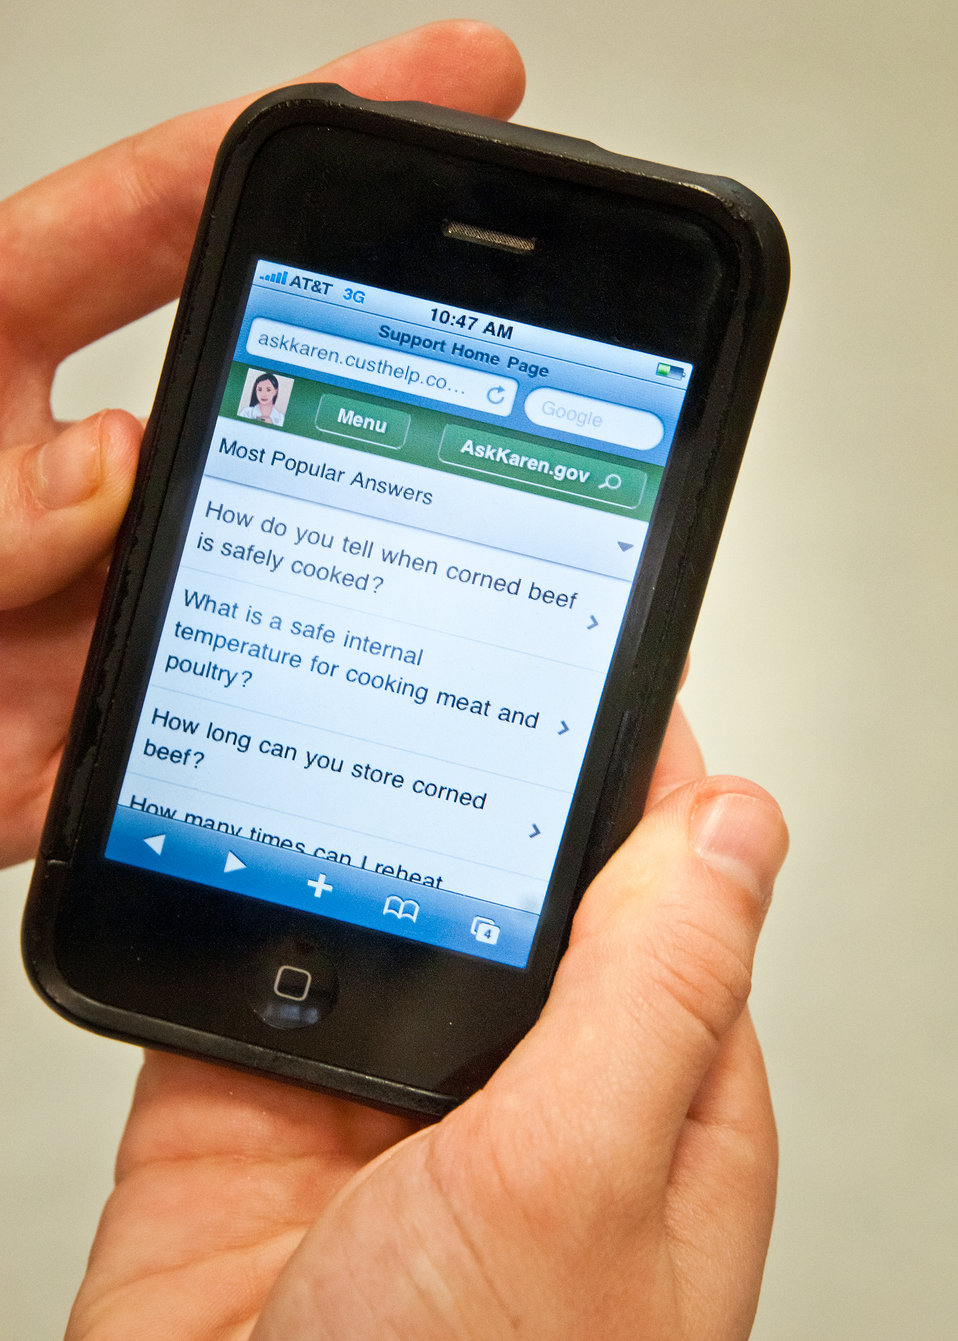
“Ask Karen,” an online food safety question and answer service provided by the United States Department of Agriculture. Food Safety Inspection Service is now mobile. “Ask Karen” provides 24/7 virtual assistance and tips on preventing food borne illness, safe food handling, storage and safe preparation of meat, poultry and egg products. The 'Ask Karen' app was announced at the United States Department of Agriculture, Food Safety Inspection Service, Food Safety Education Camp held at Maryland City Elementary in Laurel, MD, on Thursday, May 5, 2011.